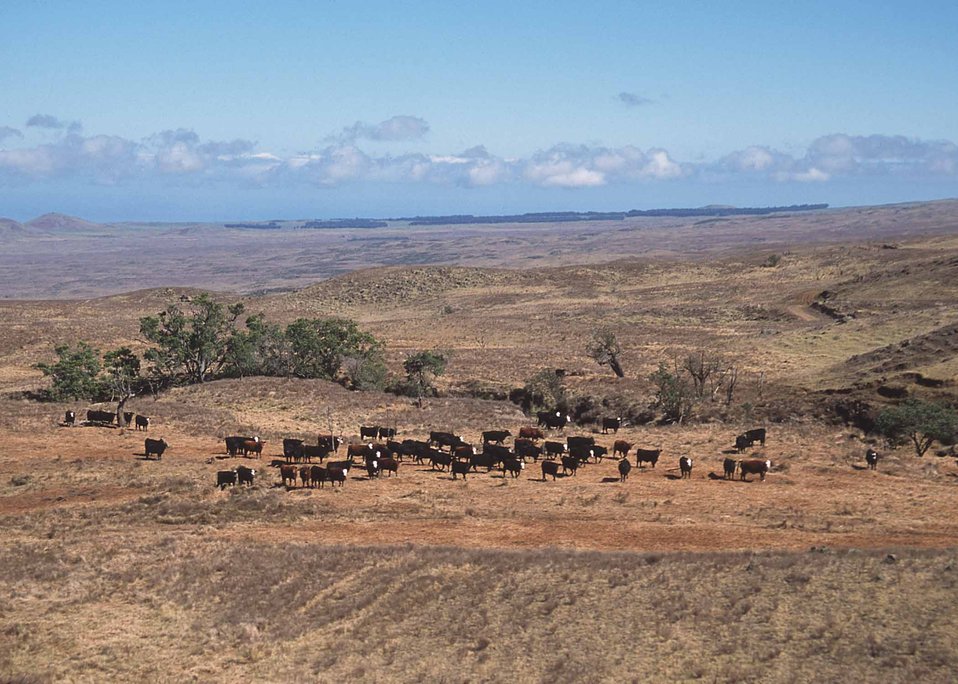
Rangeland in Hawaii is starting to show the stress of drought.